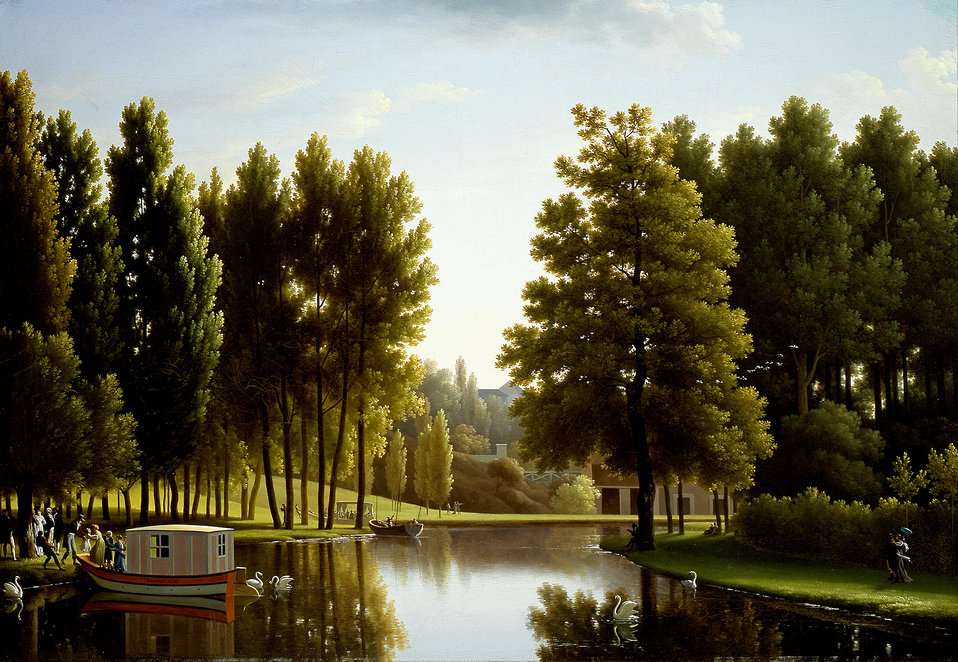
Bidauld, Jean Joseph Xavier - The Park at Mortefontaine - Google Art Project